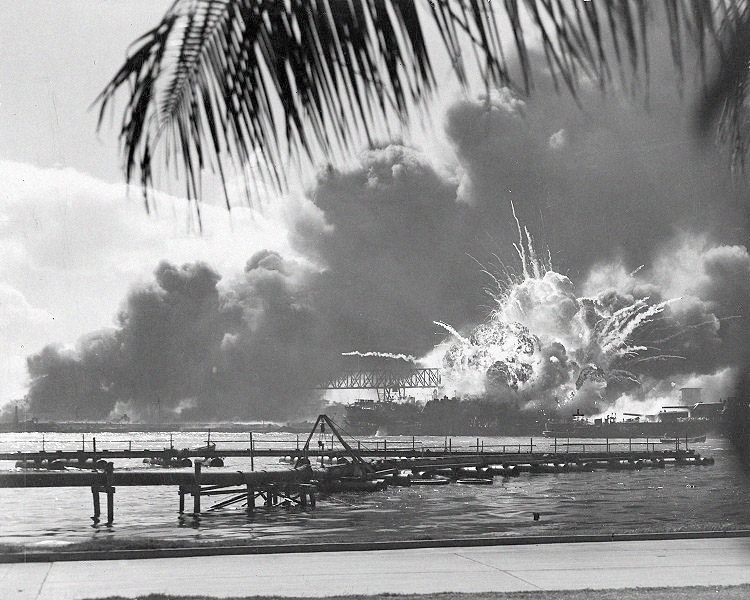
Spirited remembrance; Stealth bomber visits Pearl Harbor

A Navy photographer snapped this photograph of the Japanese attack on Pearl Harbor in Hawaii Dec. 7, 1941, just as the USS Shaw exploded.